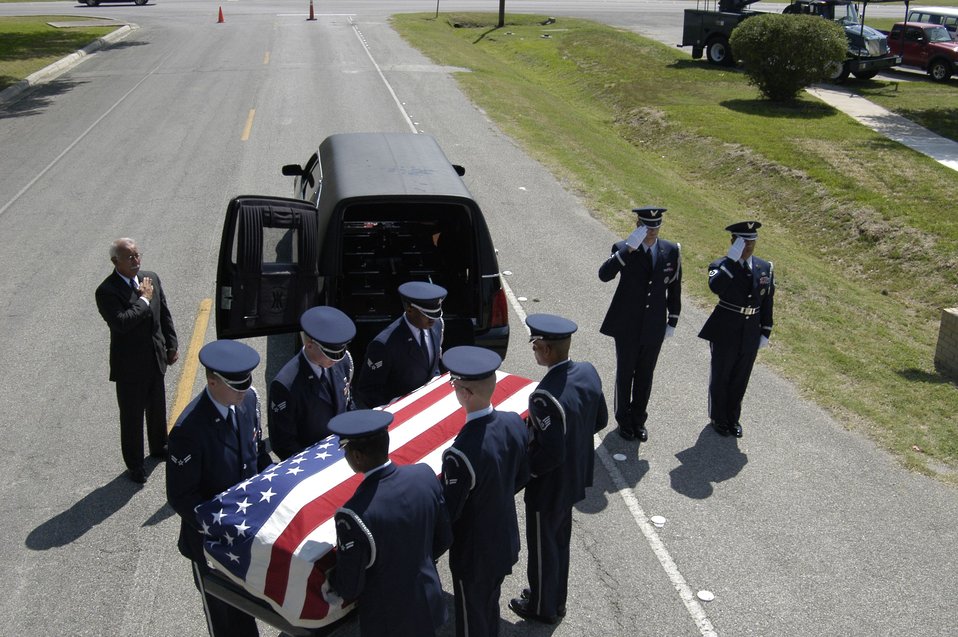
Video highlights honor guard mission

LACKLAND AIR FORCE BASE, Texas -- Honor guard pallbearers remove a flag-draped casket from a hearse during the filming of a video. Airmen of the 37th Communications Squadron are producing a three-to-five minute honor guard mission video to help recruit new honor guard members.